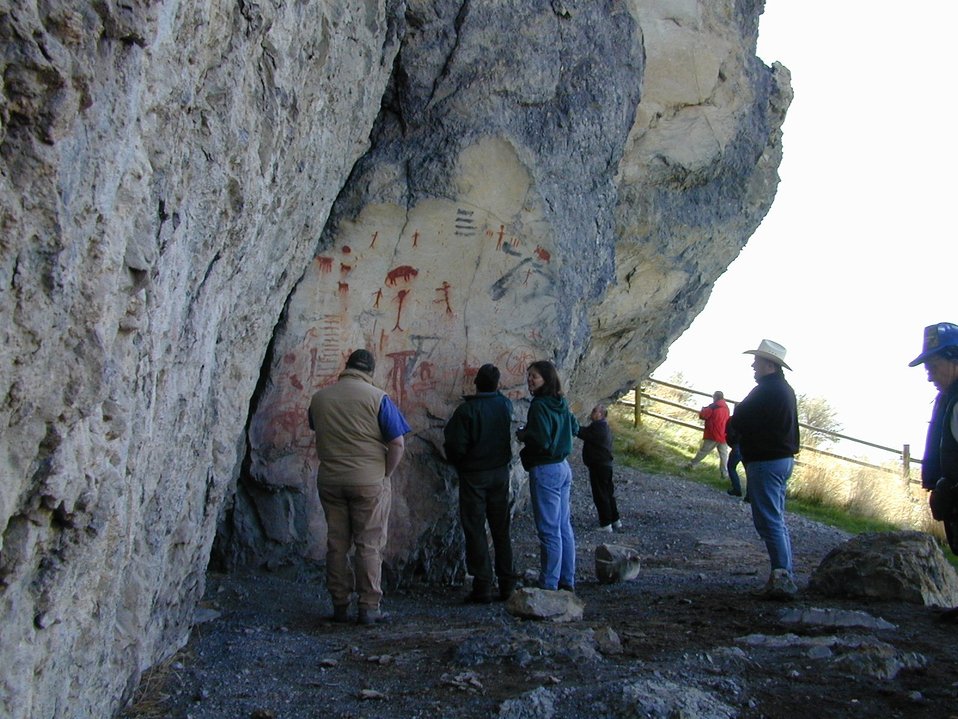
Birch Creek Valley, Bison and Veratic Rock Shelters